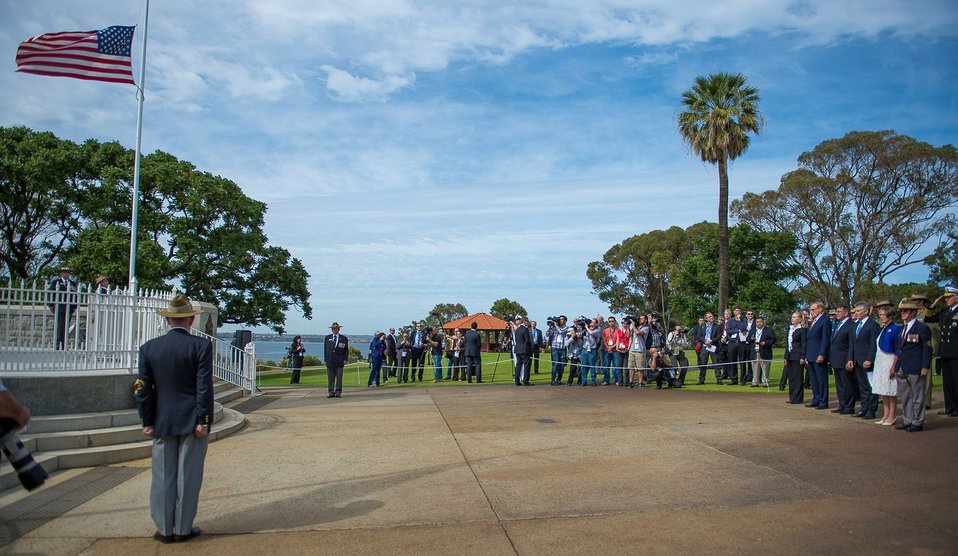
Secretary Clinton, Minister Carr, Secretary Panetta, and Minister Smith Participate in a Wreath-Laying Ceremony

From left to right, U.S. Secretary of State Hillary Rodham Clinton, Australian Foreign Minister Robert Carr, U.S. Secretary of Defense Leon Panetta, and Australian Defense Minister Stephen Smith participate in wreath-laying ceremony at the State War Memorial at Kings Park and Botanic Garden in Perth, Australia, November 14, 2012. [U.S. Embassy in Canberra, Australia photo by Travis Longmore/ Public Domain]